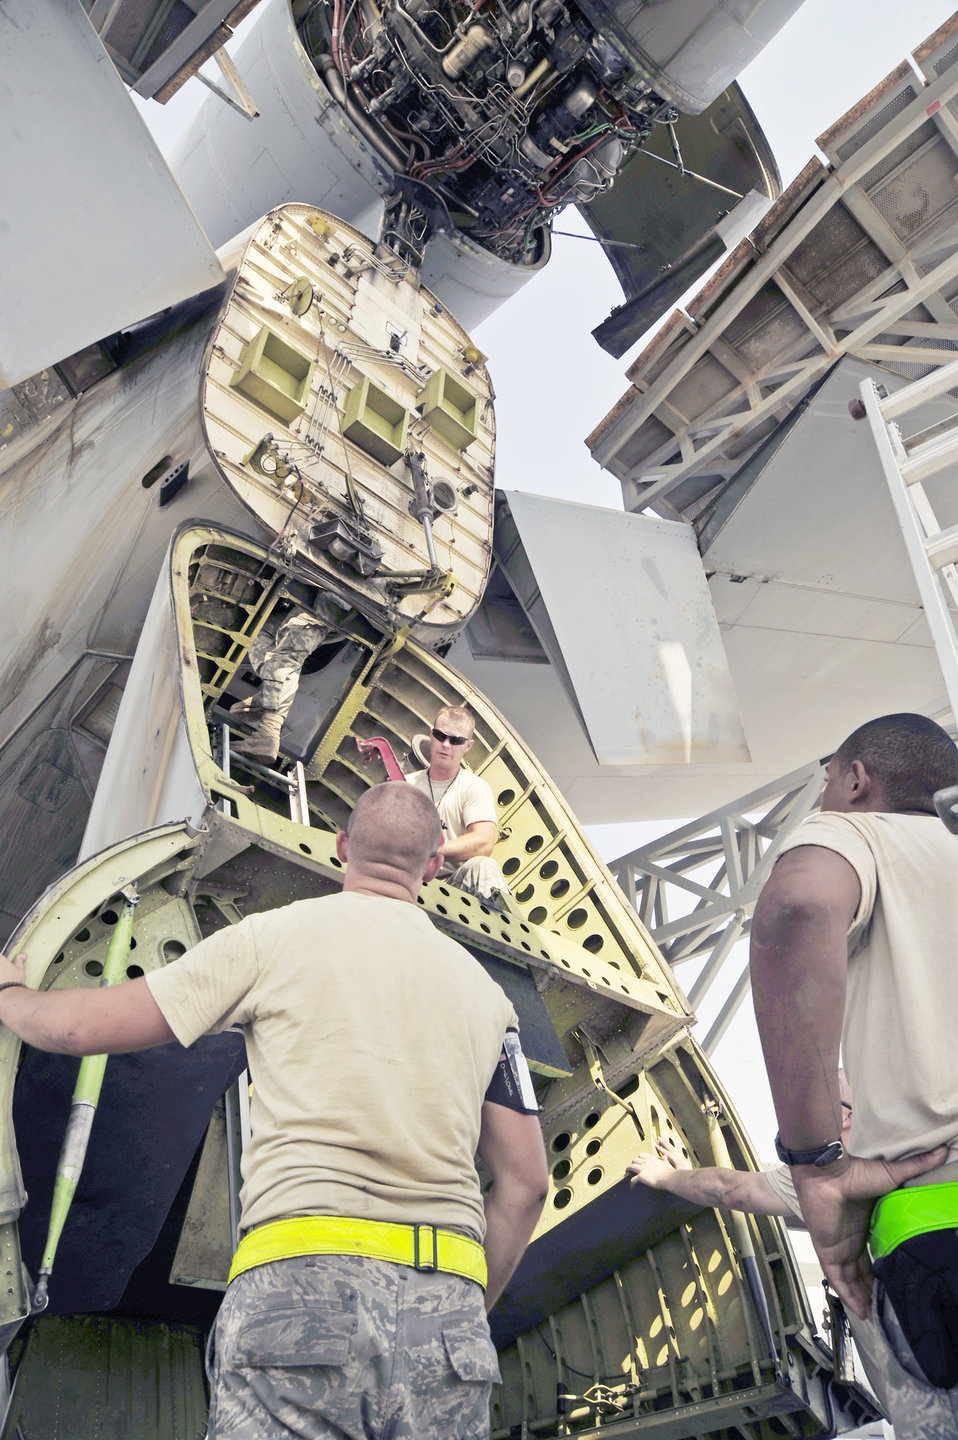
KC-10 maintainers work around the clock to keep aircraft fuel flowing

Airmen from the 380th Expeditionary Aircraft Maintenance Squadron prepare a KC-10 Extender for an engine change Oct. 28, 2009, at a base in Southwest Asia. The Airmen followed technical orders to properly prepare for a No. 2 engine change, located on the upper empennage of the aircraft.